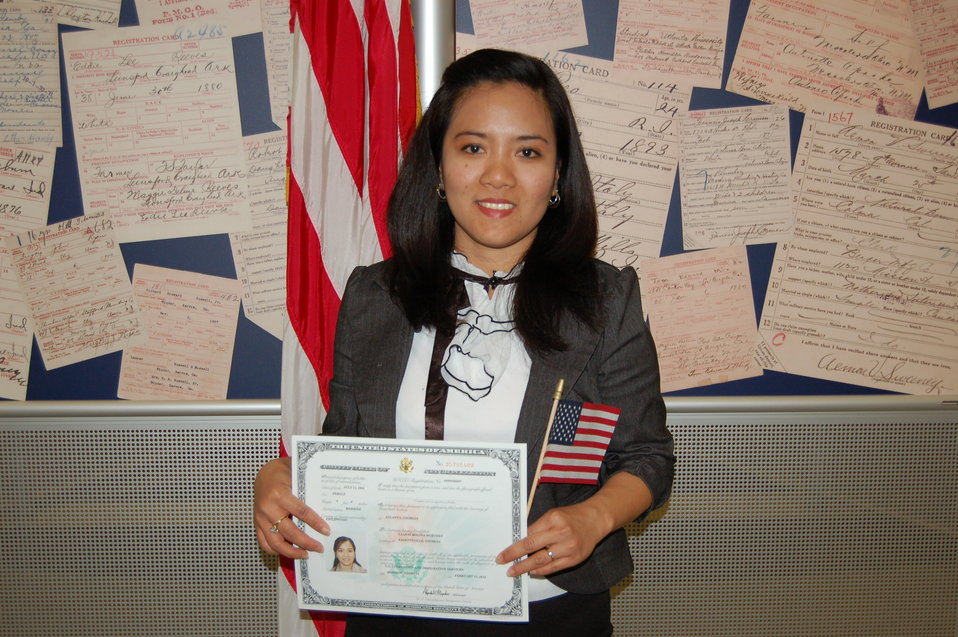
New Citizens